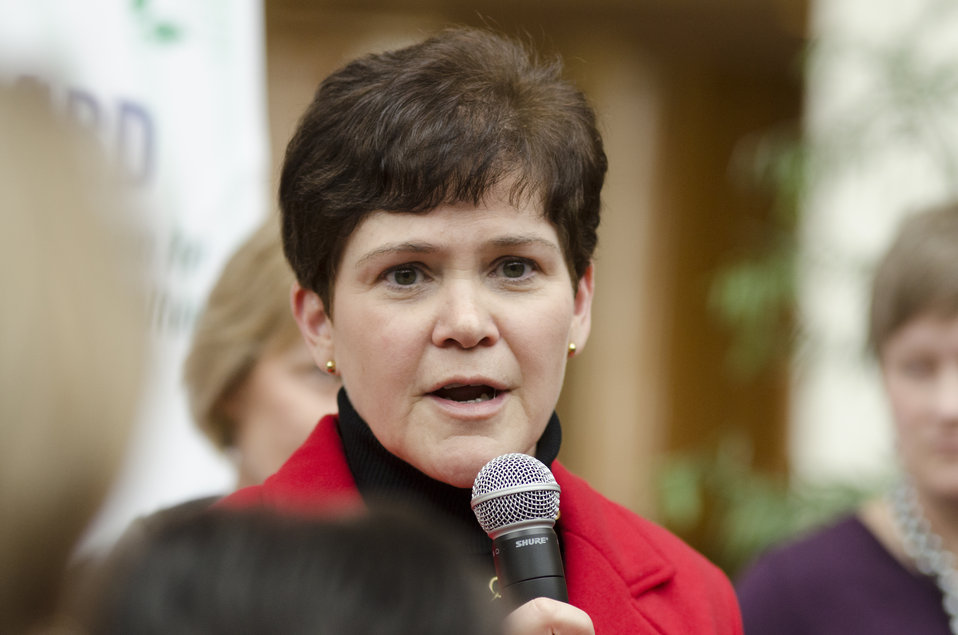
The U.S. Department of Agriculture (USDA) 2013 Agricultural Outlook Forum was held at the Crystal Gateway Marriott Hotel in Arlington, VA on Friday, Feb. 22, 2013. Agriculture Chief of Staff Krysta Harden participated in the Women in Agriculture-Speed Networking Event, which encouraged and promoted the participation of women in American agriculture.